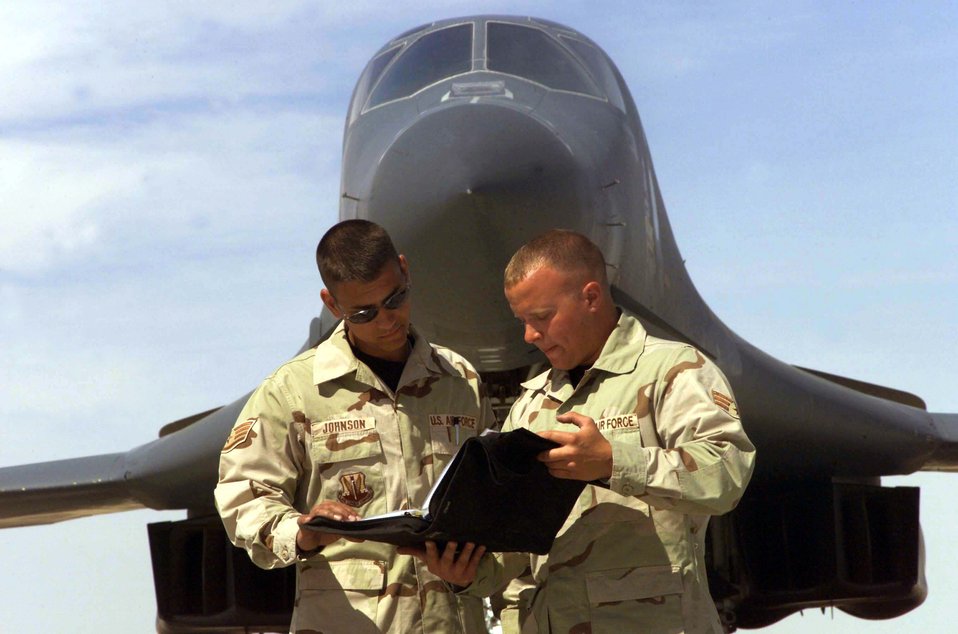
Check out the Lancer

SOUTHWEST ASIA -- Staff Sgt. Andrew Johnson (left) and Senior Airman Nicholas Guthmiller review a maintenance checklist on a B-1 Lancer at a forwarded-deployed location in Southwest Asia. Both airmen are crew chiefs with the 28th Expeditionary Aircraft Maintenance Squadron.